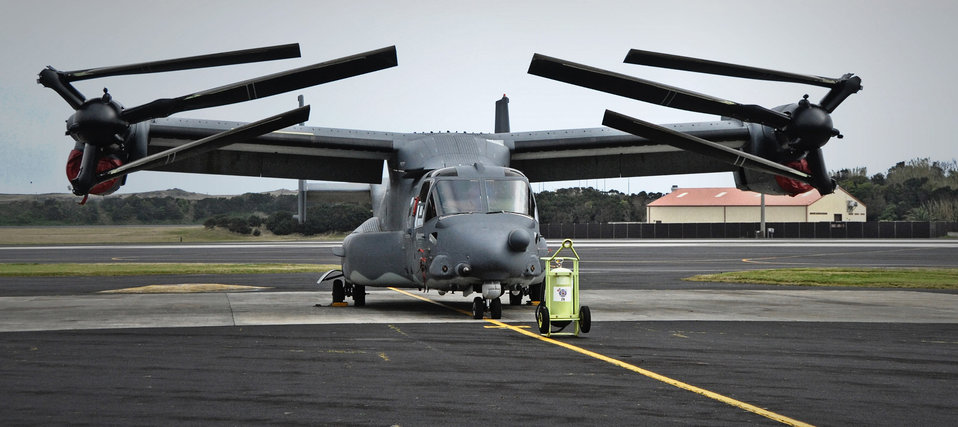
Waiting for the call

A CV-22 Osprey sits on the flightline March 22, 2011, at Lajes Field, Azores, standing by for a mission in support of Operation Odyssey Dawn.